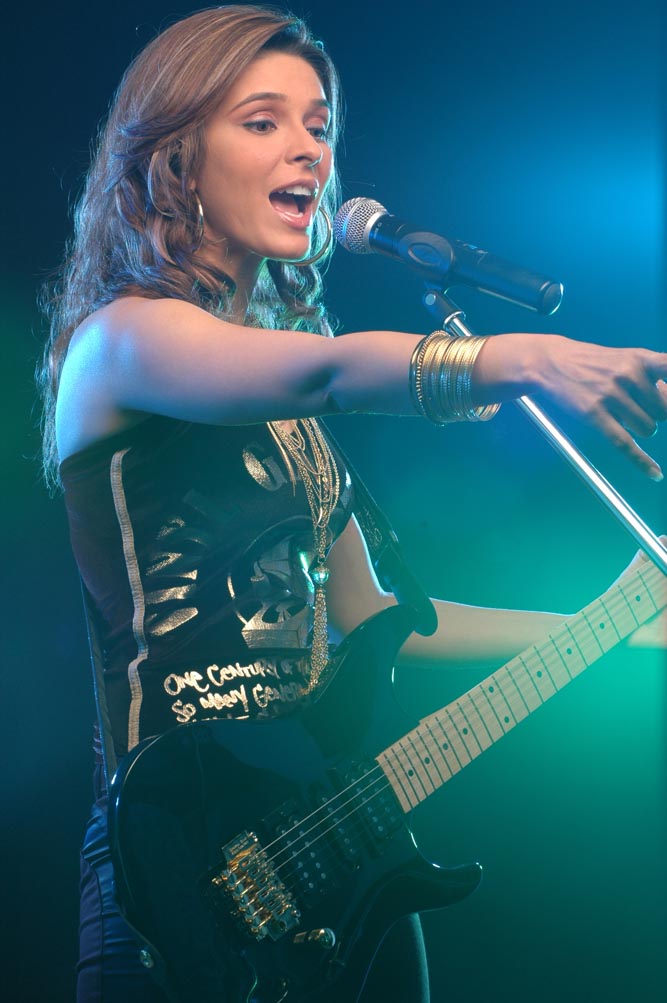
Raageshwari